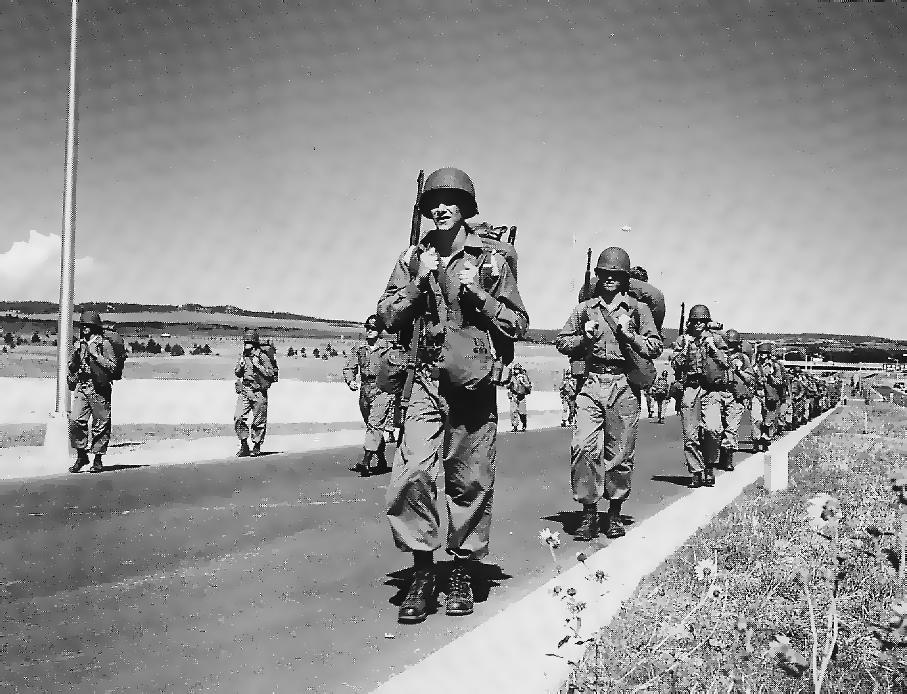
50th anniversary marks 306 future cadets taking oath at academy

LOWRY AIR FORCE BASE, Colo. -- Cadets from the first Air Force Academy class march during a training exercise at the school's temporary location here during the summer of 1955.